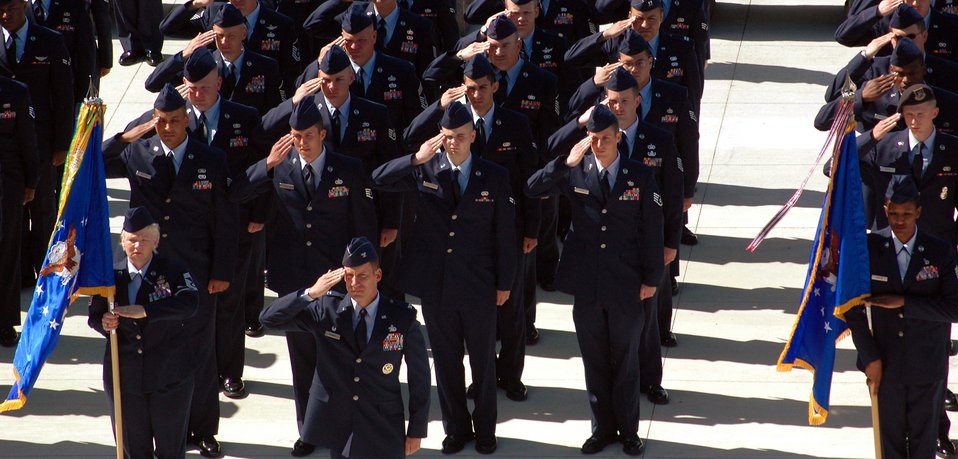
50th Space Wing welcomes new commander

A formation of 50th Space Wing Airmen salute the American flag at the beginning of the 50th SW change of command at Schriever Air Force Base, Colo., May 22. Col. Teresa Djuric succeeded Col. John Hyten as wing commander.